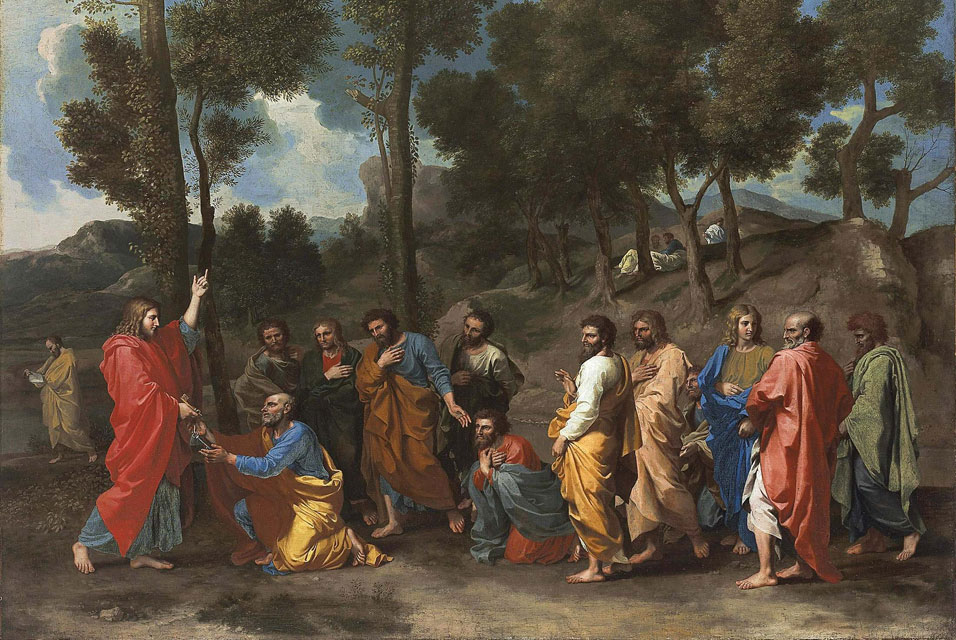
'Ordination' by Nicolas Poussin, 1630s